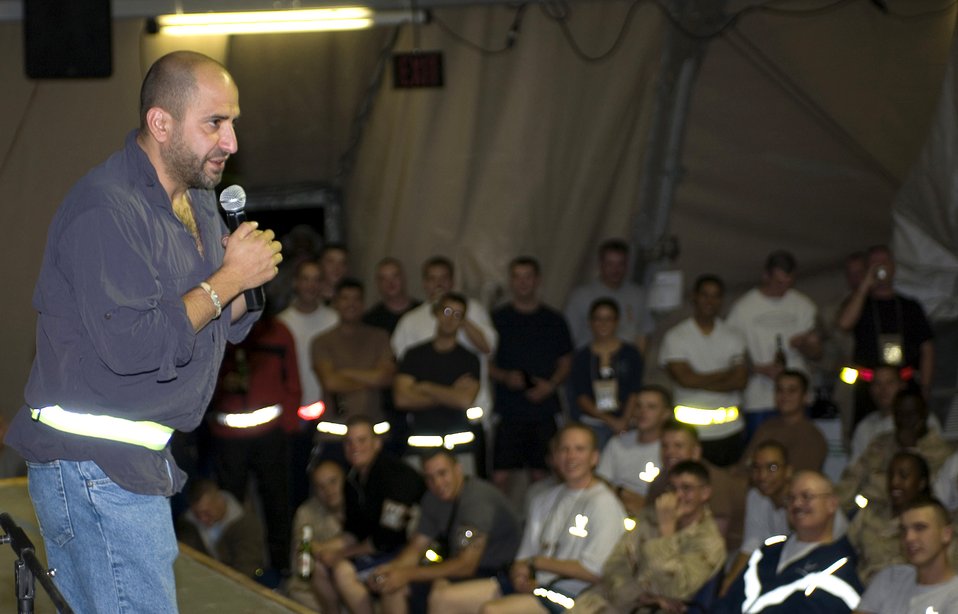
Insomniacs invade Manas

MANAS AIR BASE, Kyrgyzstan -- Comedian Dave Attell entertains troops here Sept 14.